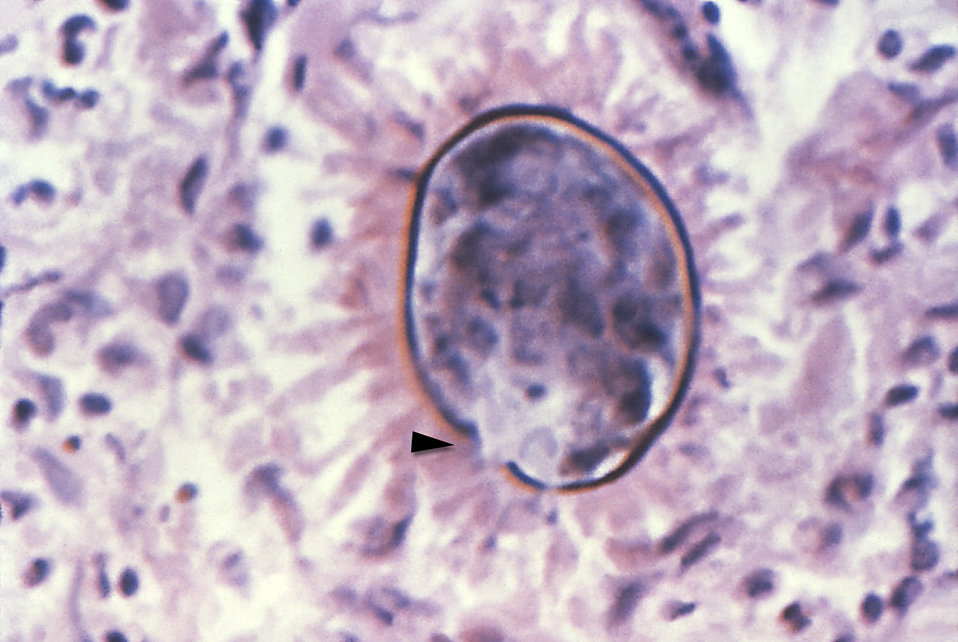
This micrograph depicts a Schistosoma japonicum egg, and its vestigial spine (arrow) taken from a liver tissue biopsy.